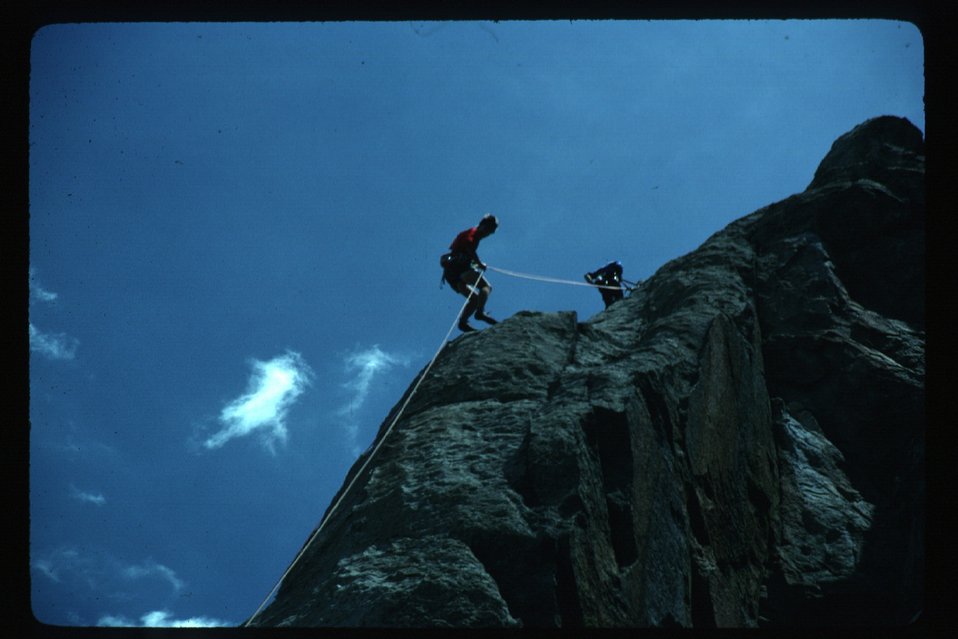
Rock climber Burley City of Rocks Burley Field Office USRD Upper Snake River District